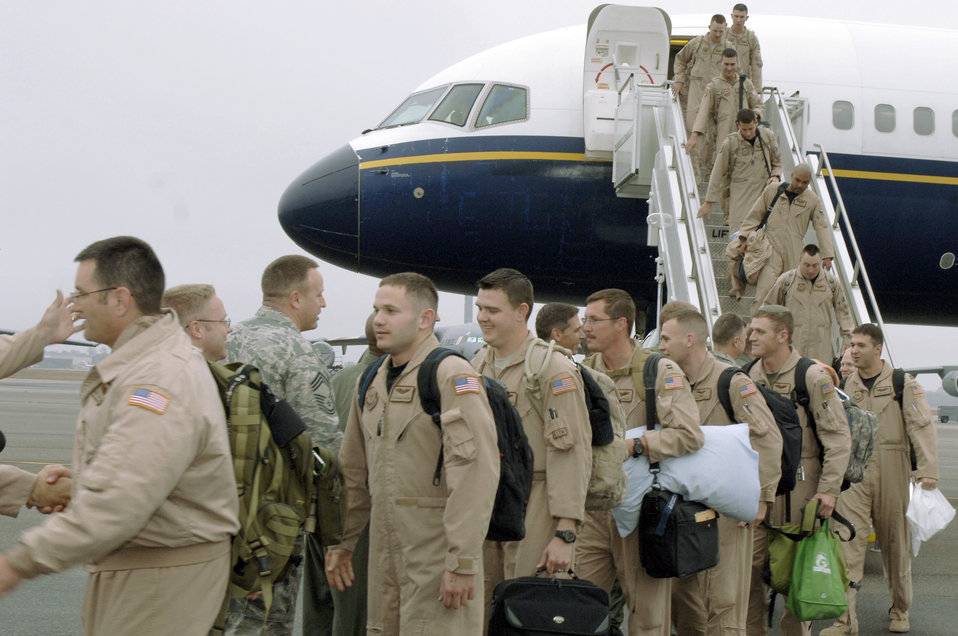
Charleston Airmen return from war

Airmen of the 15th Airlift Squadron return from their deployment Jan. 3 at Charleston Air Force Base, S.C. More than a 130 Airmen from the 15th Airlift Squadron returned from their 120-day deployment in Southwest Asia.